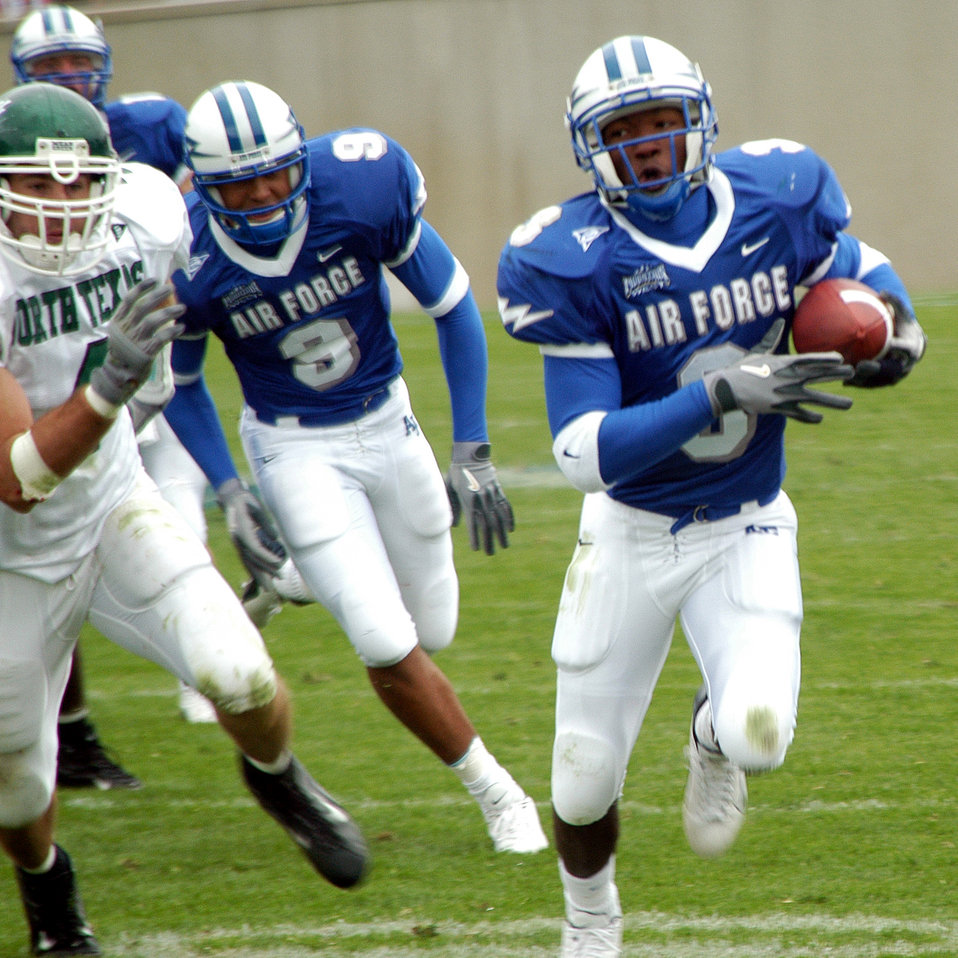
Falcon game

U.S. AIR FORCE ACADEMY, Colo. -- Air Force halfback Matt Ward works around the perimeter on a 15-yard touchdown run during the Air Force's 34-21 win over the University of North Texas on Sept. 13. Ward carried the ball six times for 61 yards and one touchdown. The Falcons meet the University of Wyoming Cowboys on Sept. 20 at Falcon Stadium.